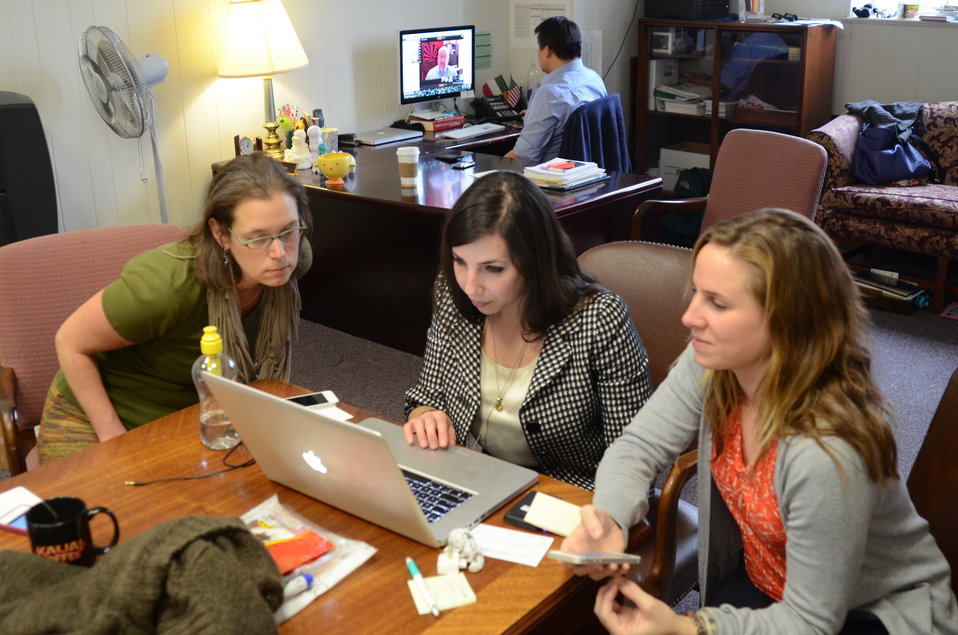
(L to R) U.S. Department of Agriculture (USDA) Agricultural Marketing Service (AMS) communications specialist Wendy Wasserman, USDA Office of Communications (OC) New Media Specialist Rebecca Frank, and USDA OC Web Communications Services Director Amanda Nguyen monitor USDA’s National Coordinator for Local and Regional Food Systems Elanor Starmer's live Google Hangout to discuss the importance of a comprehensive Food, Farm and Jobs Bill to local and regional food systems at USDA on Thursday, Nov. 21, 2013.